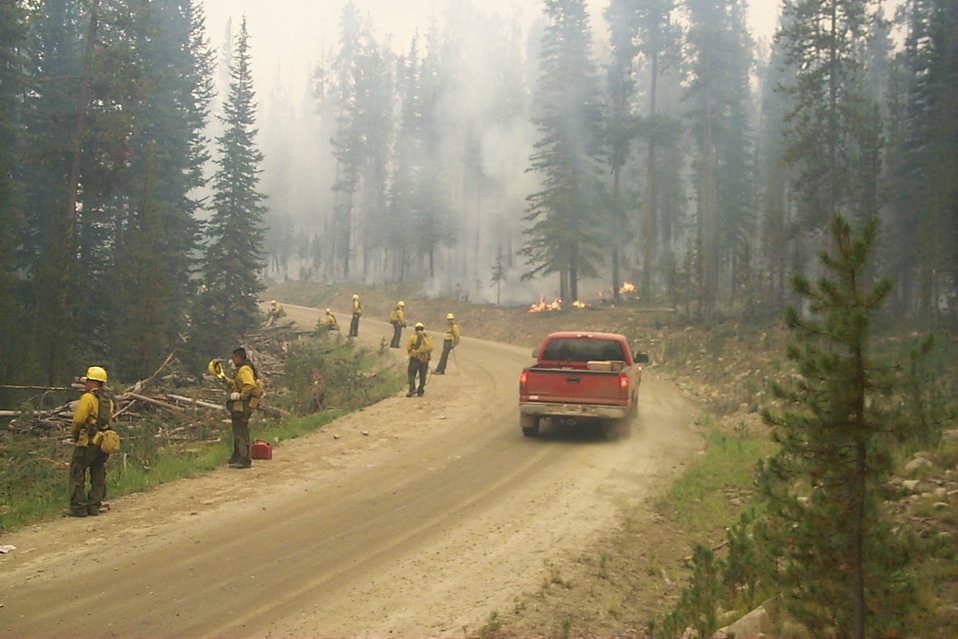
Fire fighters holding the line Fire Clearwater Fire Salmon Field Office USRD Upper Snake River District